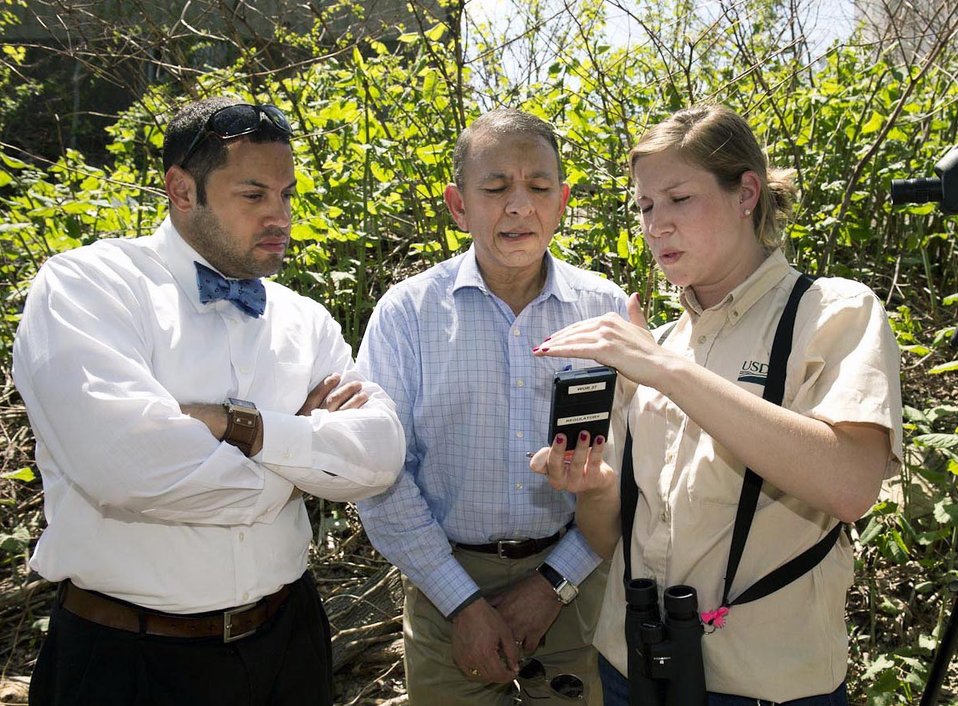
(L to R)U.S. Department of Agriculture (USDA) Animal Plant Health Inspection Service (APHIS) Marketing and Regulatory Programs (MRP) Deputy Under Secretary Gary Woordward, USDA Animal Plant Health Inspection Service (APHIS) Plant Protection and Quarantine (PPQ) Deputy Administrator Osama El-Lissy listen to USDA APHIS PPQ specialist Erin Abbott explain how they keep track of trees on hand held devices in Boston, MA on Monday, May 12, 2014.